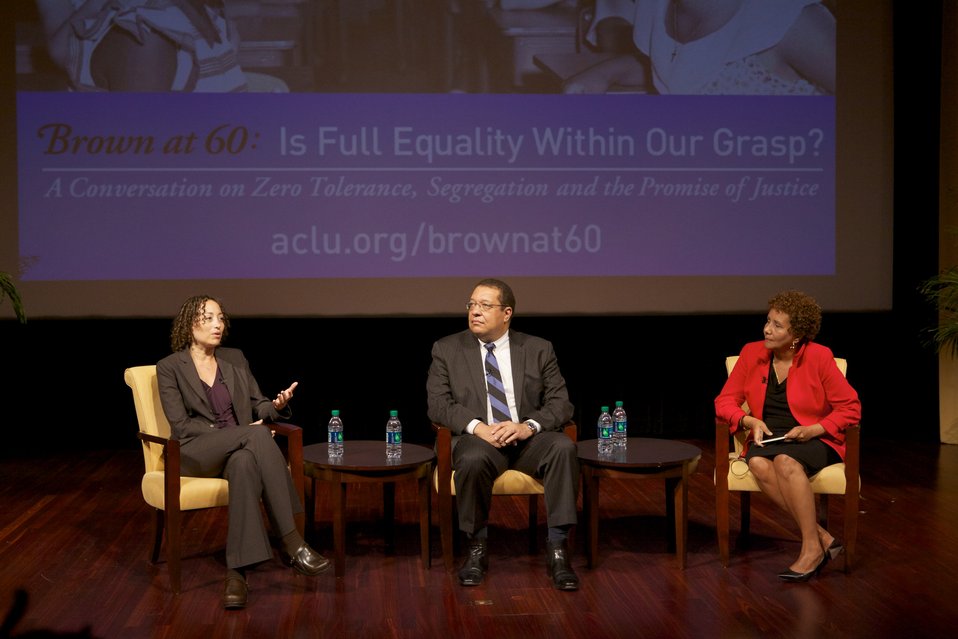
Brown at 60: Is Full Equality Within Our Grasp? A Conversation on Zero Tolerance, Segregation, and the Promise of Justice